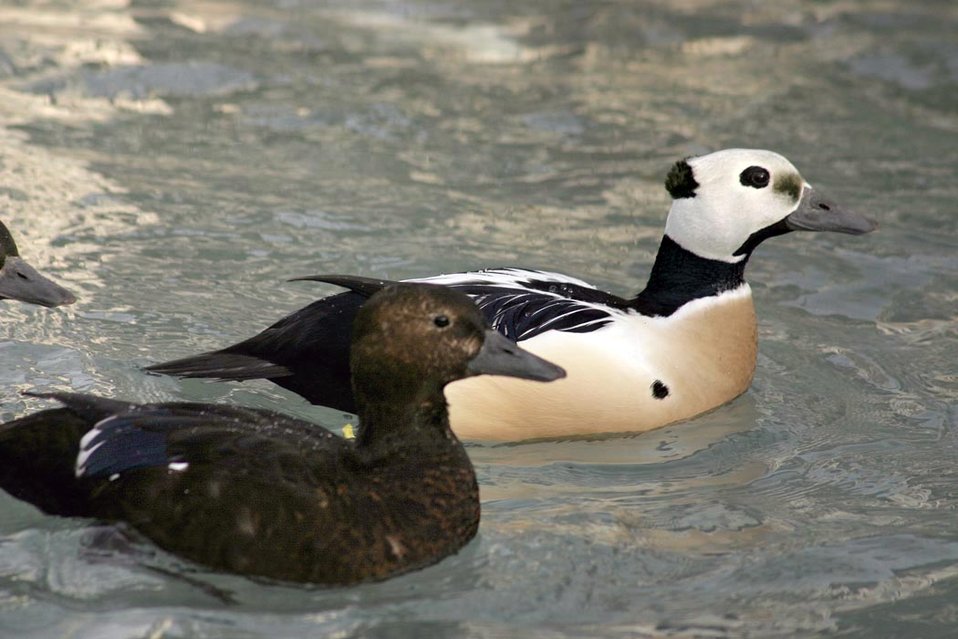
Threatened Steller's eider (Polysticta stelleri) female and male, Alaska SeaLife Center, Seward, Alaska